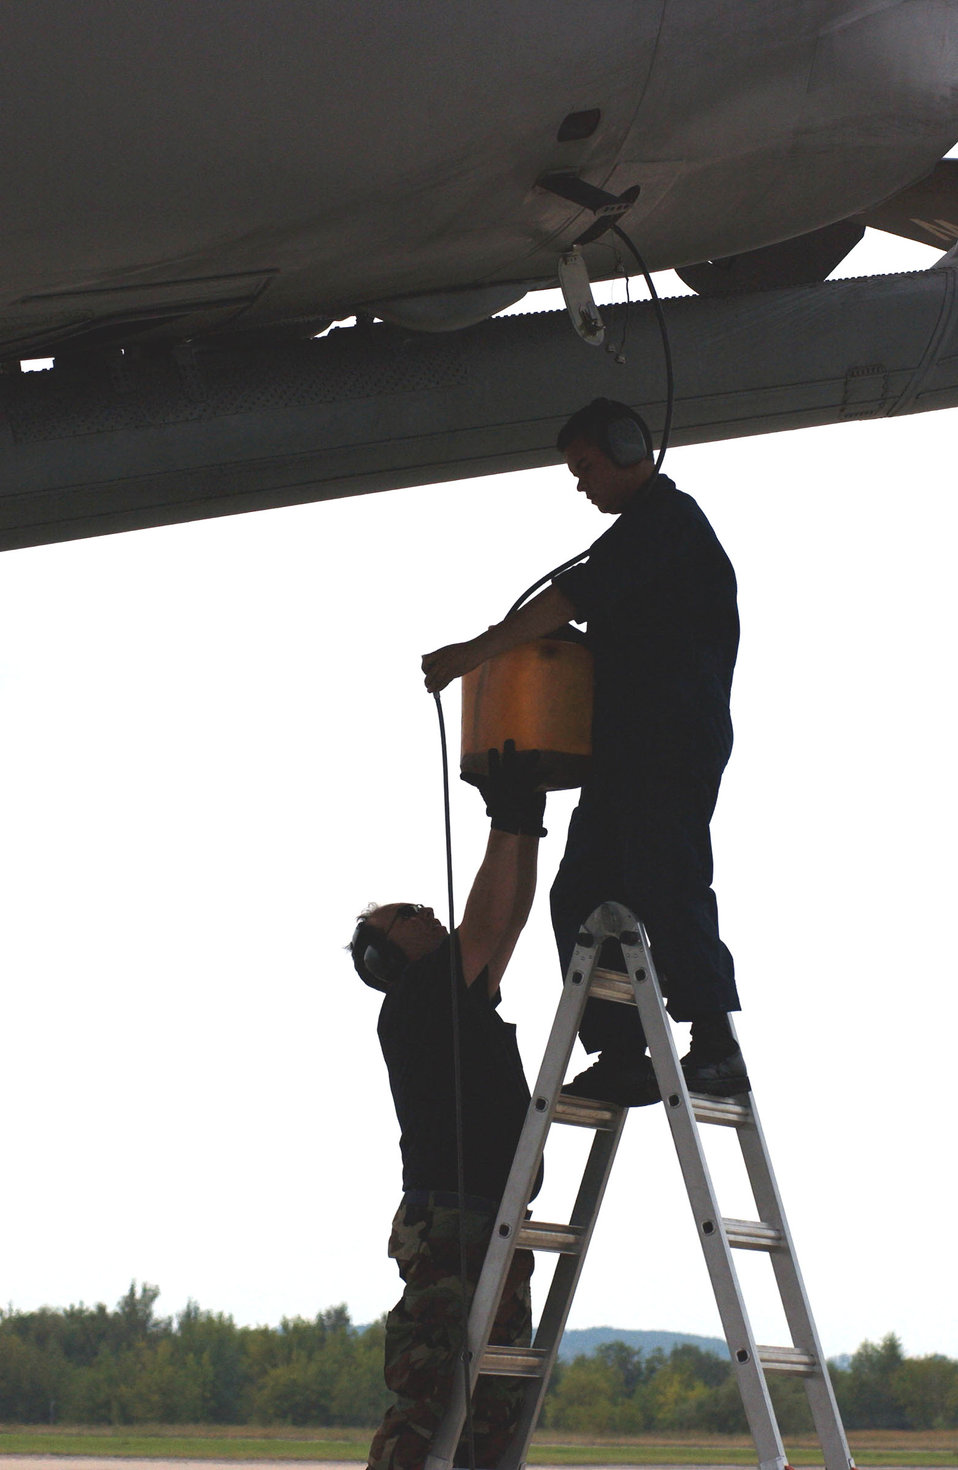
Moscow Air Show

ZHUKOVSKY, Russia -- Tech Sgts. Anthony Alvarado (left) and Alex Gomez service a KC-10 Extender after landing at the Ramenskoye Airfield here for the Moscow International Aviation and Space Salon. About 100 U.S. servicemembers are partipating in the air show Aug. 16 to 21. The Airmen are crew chiefs from the 749th Aircraft Maintenance Squadron at Travis Air Force Base, Calif.